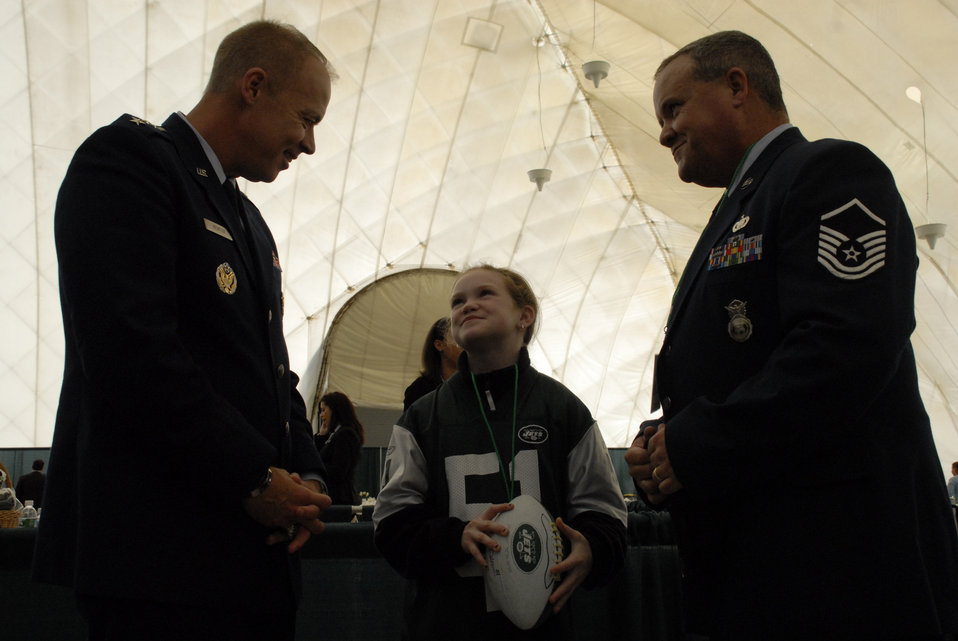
New York Jets Military Appreciation game

Lt. Gen. Dick Newton, deputy chief of staff for manpower and personnel at Air Force Headquarters at the Pentagon, speaks with Master Sgt. James Storan and his daughter Erin during the New York Jets military appreciation football game at Meadowlands Stadium in New Jersey Nov. 9. Sergeant Storan is a member of the New York Air National Guard's 106th Security Forces Squadron in Long Island, N.Y.